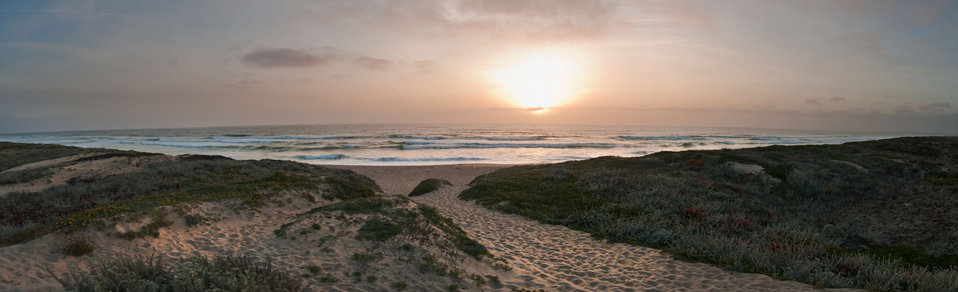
(Virtual Panorama, several photos taken within one minute) Salinas River State Beach on Thursday, June 16, 2011. This beach is approximately 900 feet from an artichoke farm on the other side of sand dunes. Publicizing voluntary stewardship of water and land are just one of the topics at the America’s Great Outdoors Initiative (AGO) Monterey Bay Pilot Area Focus Session that was held the next day in the City of Watsonville’s Civic Plaza in California. Representatives from USDA, NOAA, and other resource management agencies came together to identify partnership opportunities and determine actions for natural resource protection and enhancement to achieve water quality protection and publicize voluntary stewardship in the watersheds that drain into the Monterey Bay National Marine Sanctuary. This area includes the counties of San Mateo, Santa Cruz, Santa Clara, San Benito, Monterey (seen here), and San Luis Obispo.